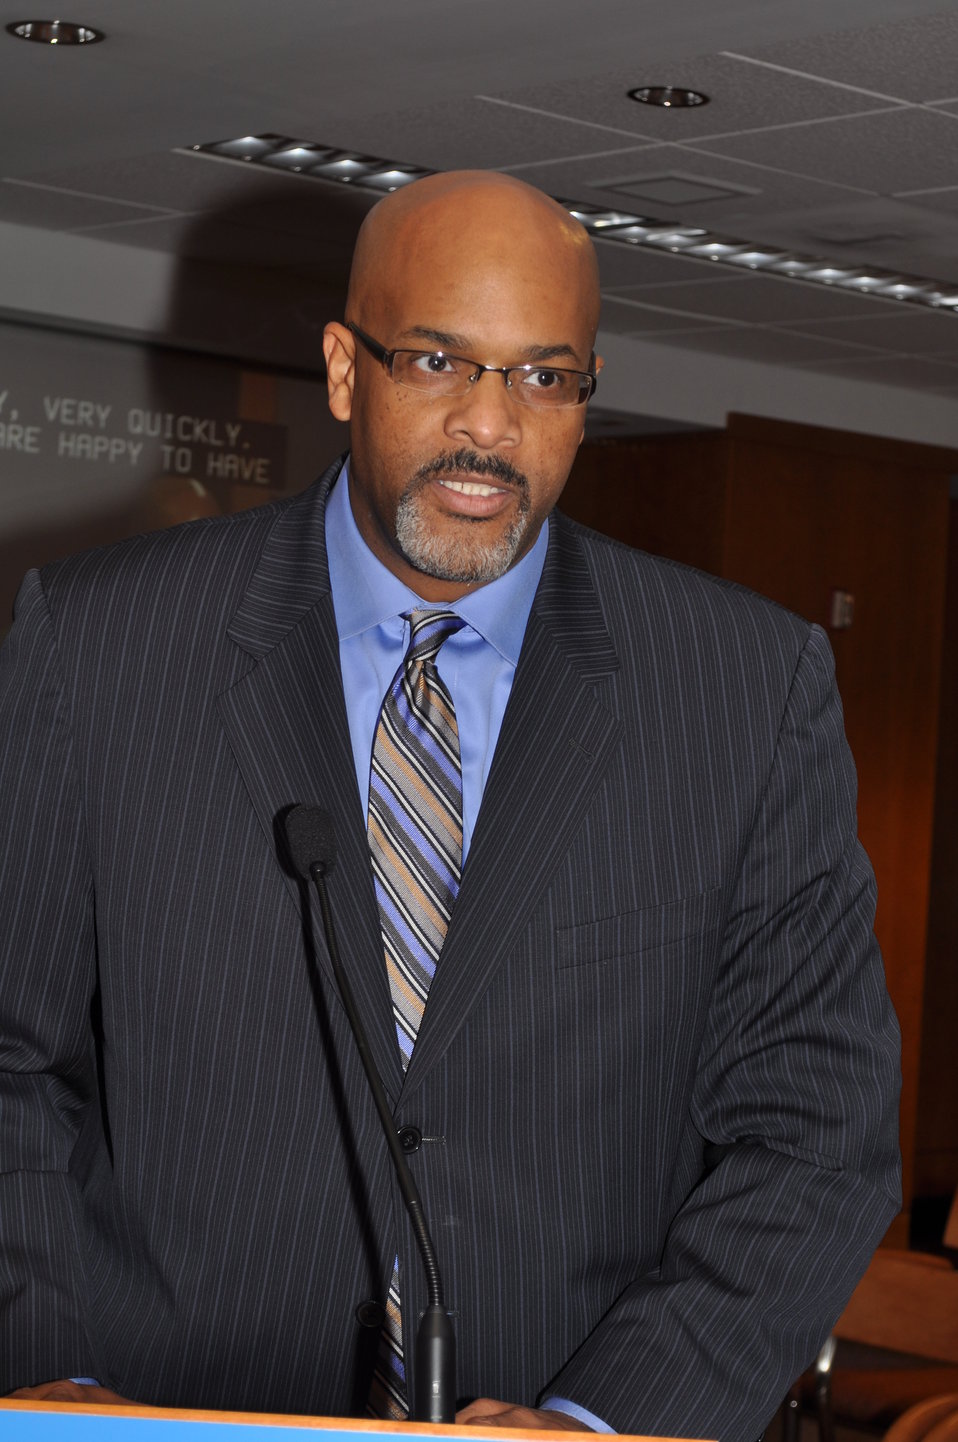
Capitalization Strategies

Workshop for small, minority and women owned businesses. Hosted by the Office of Communications Business Opportunities